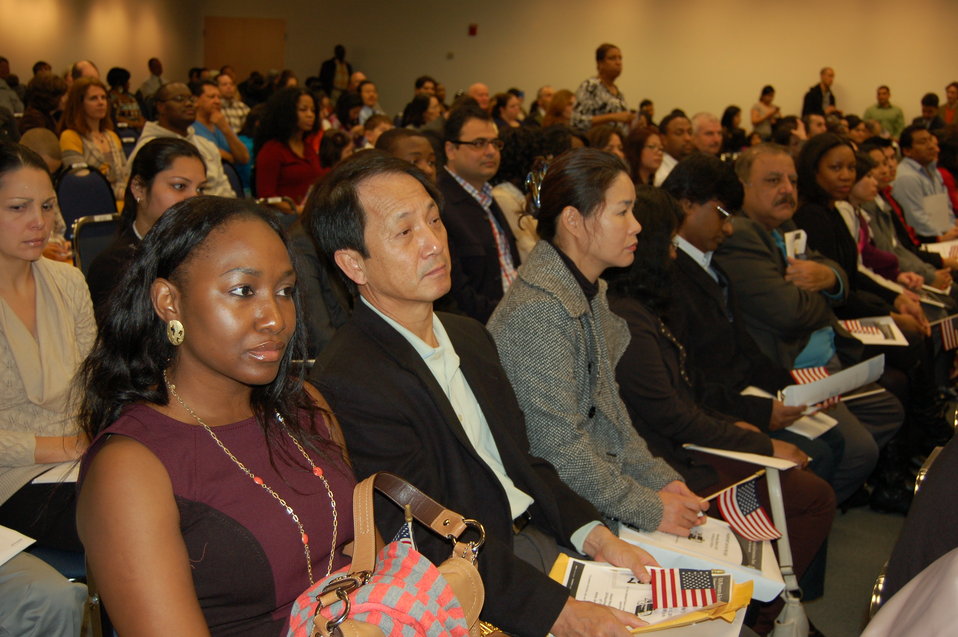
Naturalization Ceremony